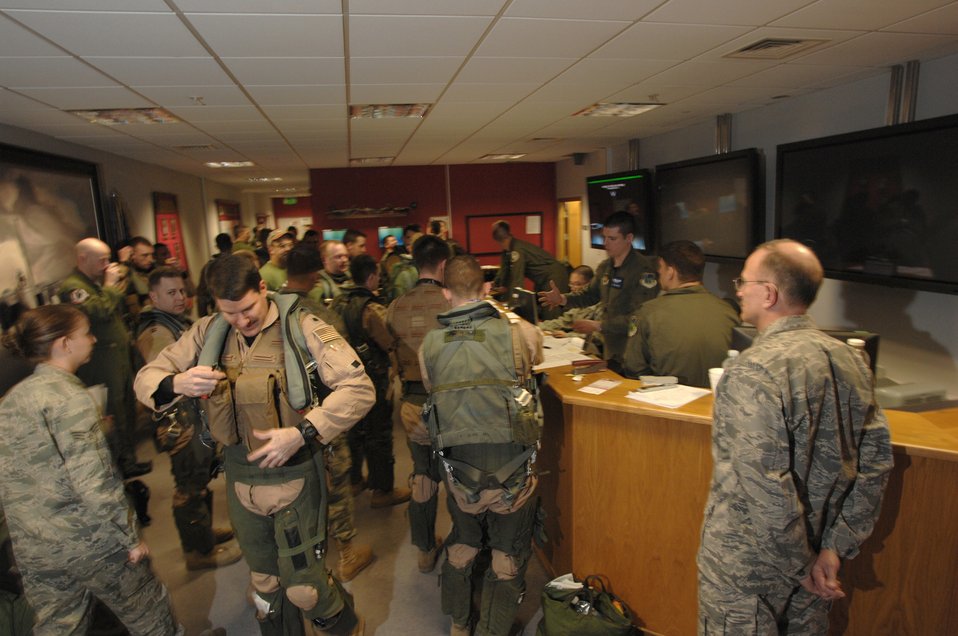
Odyssey Dawn

F-15E Strike Eagle crew members from the 492nd and 494th Fighter Squadrons make final preparations to depart RAF Lakenheath, England, March 19, 2011. Units from the 48th Fighter Wing are currently conducting pre-deployment procedures in support of Operation Odyssey Dawn. The 48th Fighter Wing provides all-weather, day or night air superiority and air-to-ground precision combat capability as well as combat search and rescue.